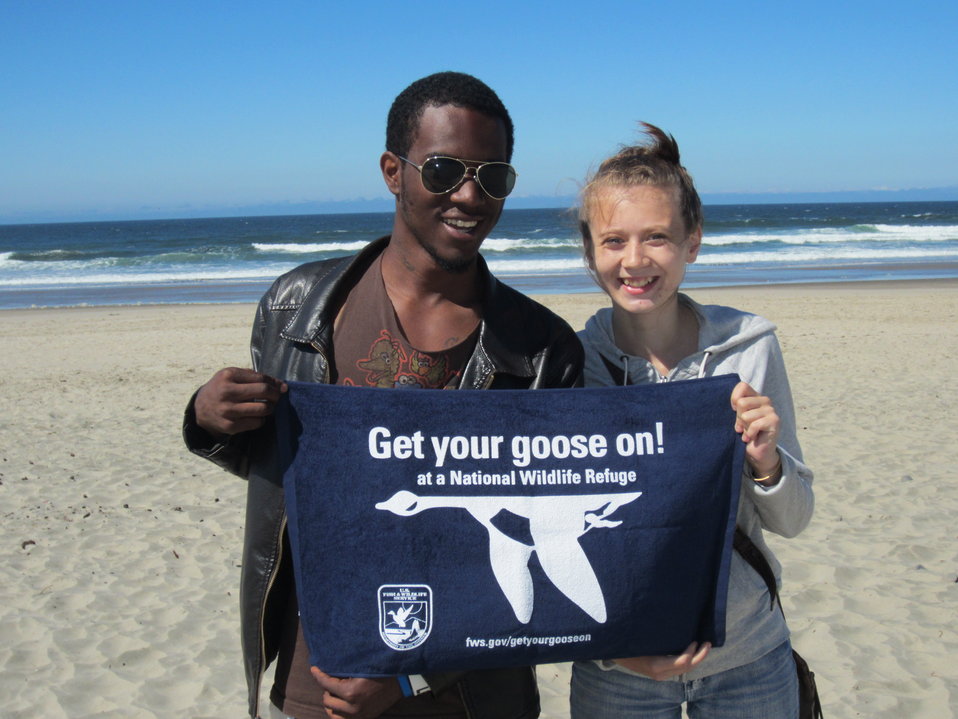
GYGO! - Oregon Coast Style

Kiona Crayton and Andre Vance get their goose on at the Oregon Coast.